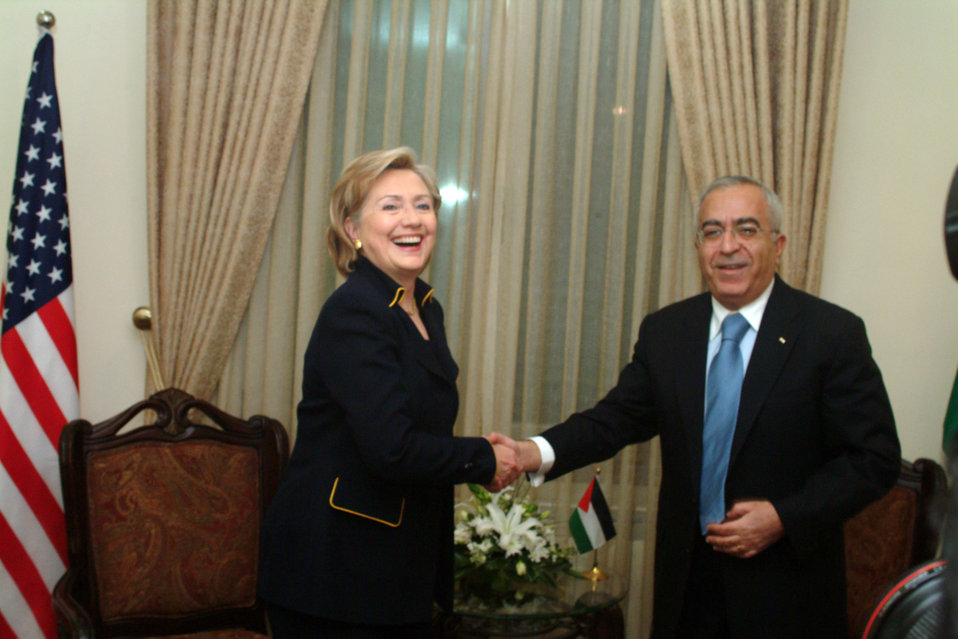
Secretary Clinton With Palestinian Authority Prime Minister

U.S. Secretary of State Hillary Rodham Clinton with Palestinian Authority Prime Minister Salam Fayad in Ramallah March 4, 2009.